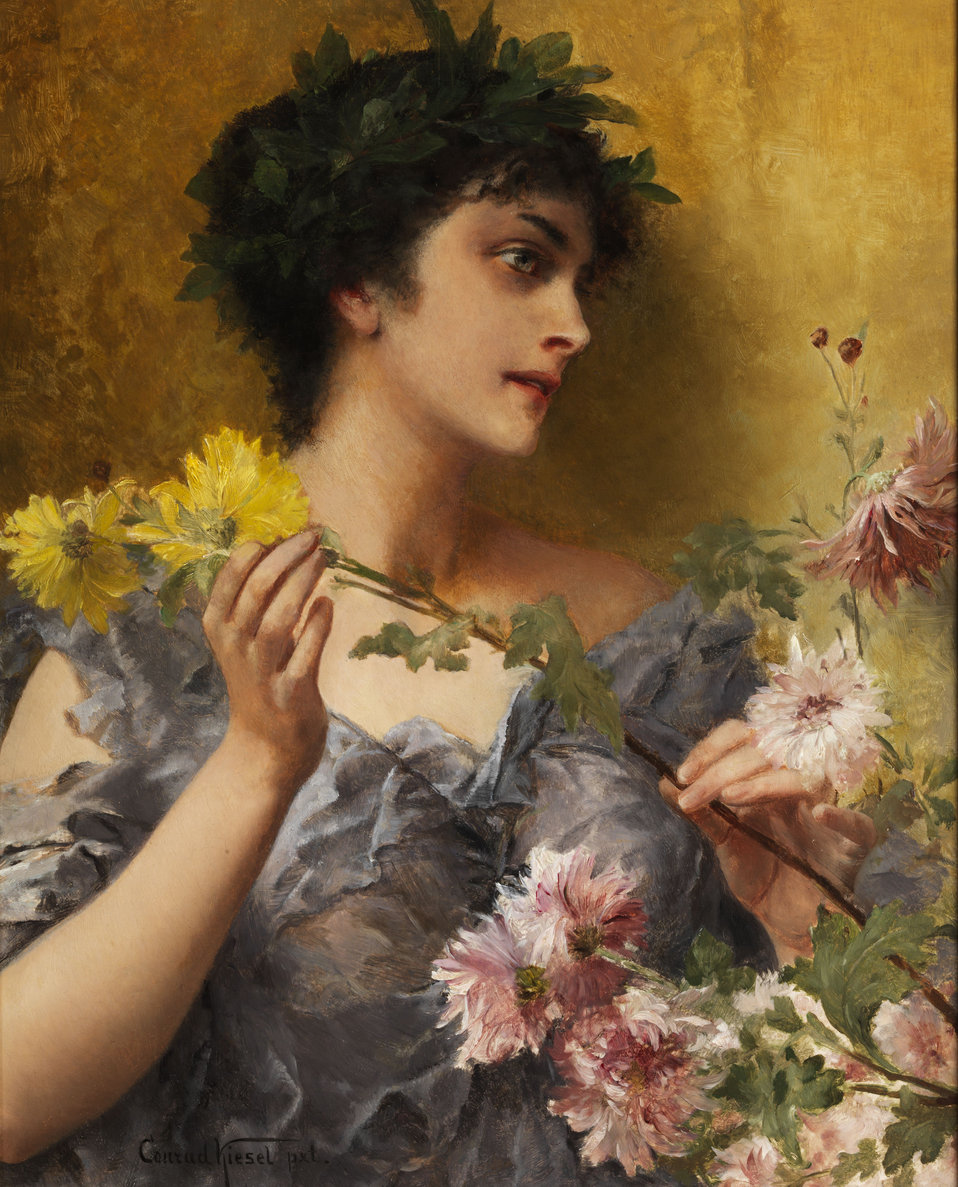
Conrad Kiesel Tribut an die Blumen